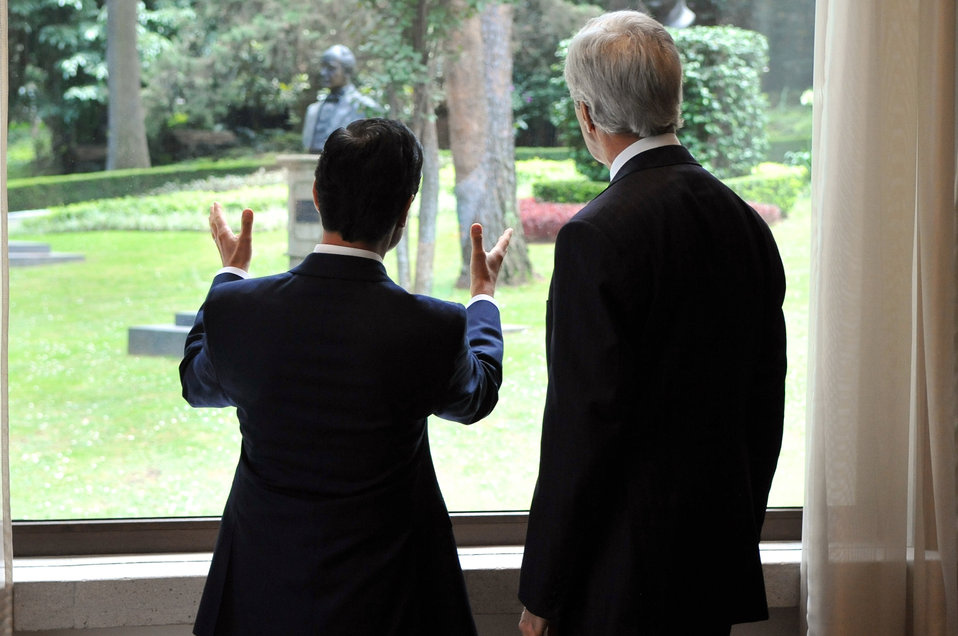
Mexican President Peña Nieto Shows Secretary Kerry View From Office Window

Mexican President Enrique Peña Nieto shows U.S. Secretary of State John Kerry the view from a window in his private office before a bilateral meeting at Los Pinos, the presidential residence and office compound, in Mexico City on May 21, 2014.